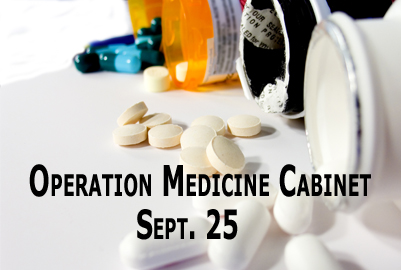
Operation Medicine Cabinet